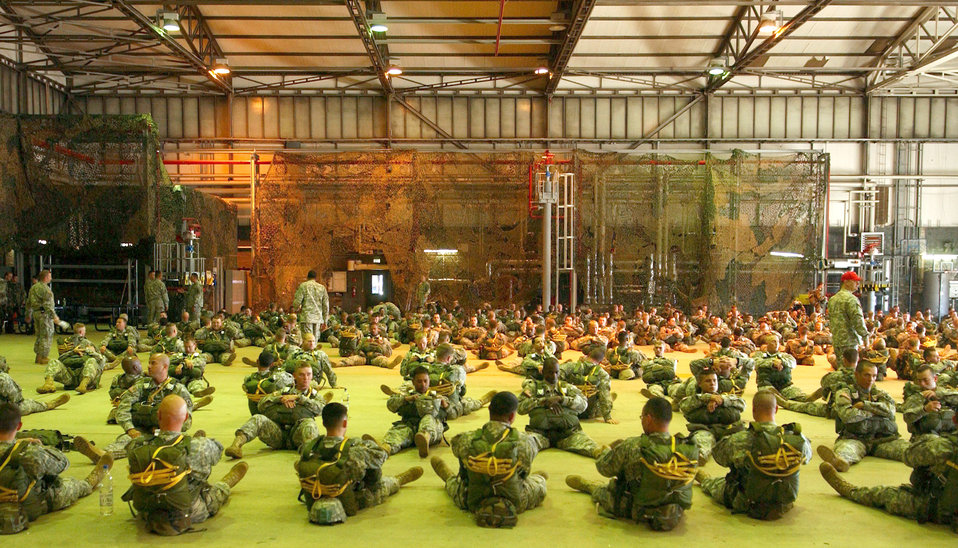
Getting Ready to Jump

U.S. Army paratroopers from the 173rd Airborne Brigade Combat Team prepare for an aerial jump Oct. 17 at Ramstein Air Base, Germany. The paratroopers are joined by members of the Air Force's 786th Security Forces Squadron; the German army's 26th Luftwaffen Brigade; and members of a German airlift school.